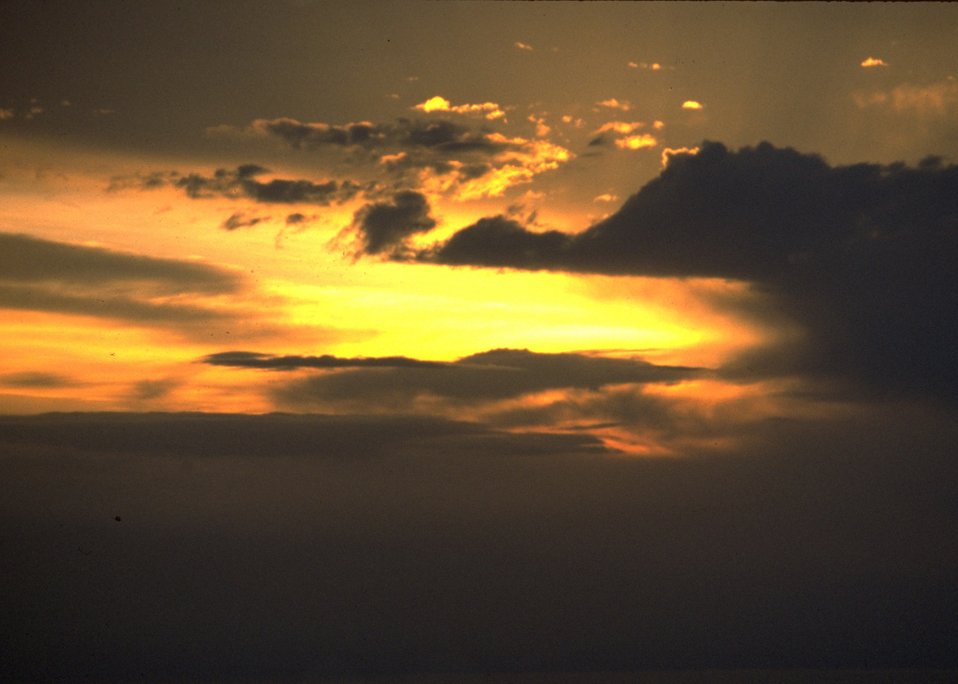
Sunset view.